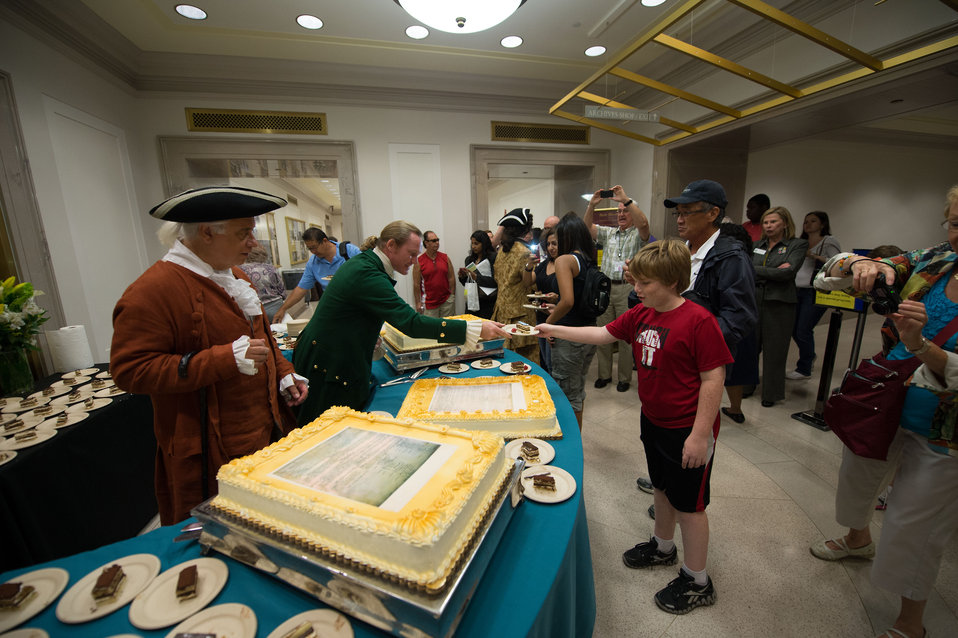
Cake!

A young guest gets a piece of cake at the Counstitution Day party